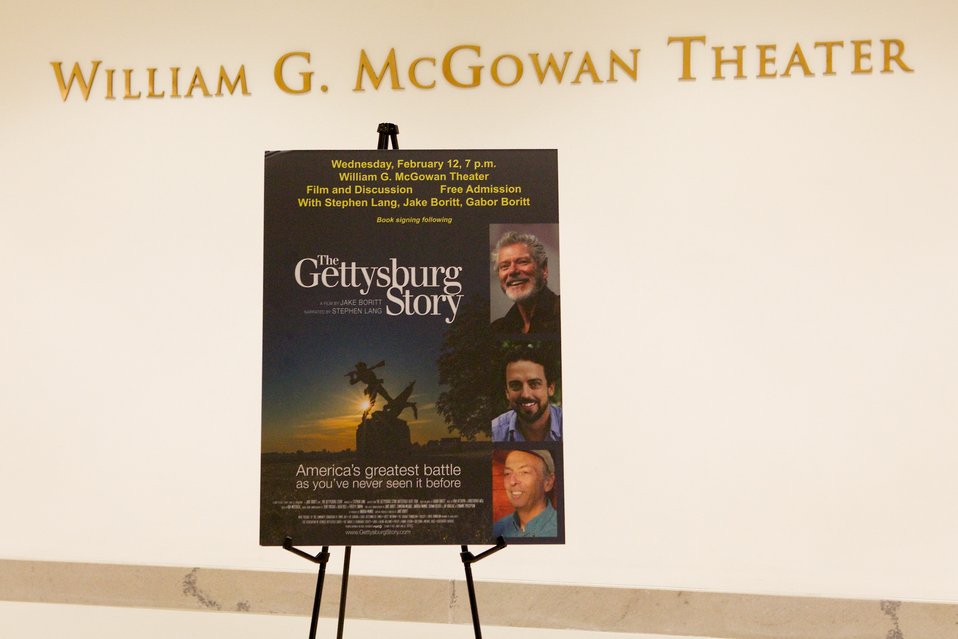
The Gettysburg Story and The Wheatfiled